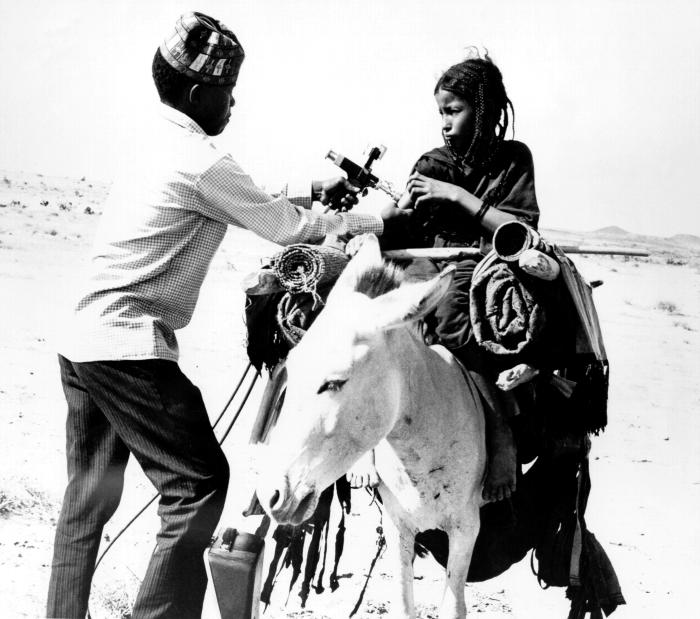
This nomadic Tuareg girl is receiving a smallpox vaccination in this 1967 photograph shot in Mali, West Africa.